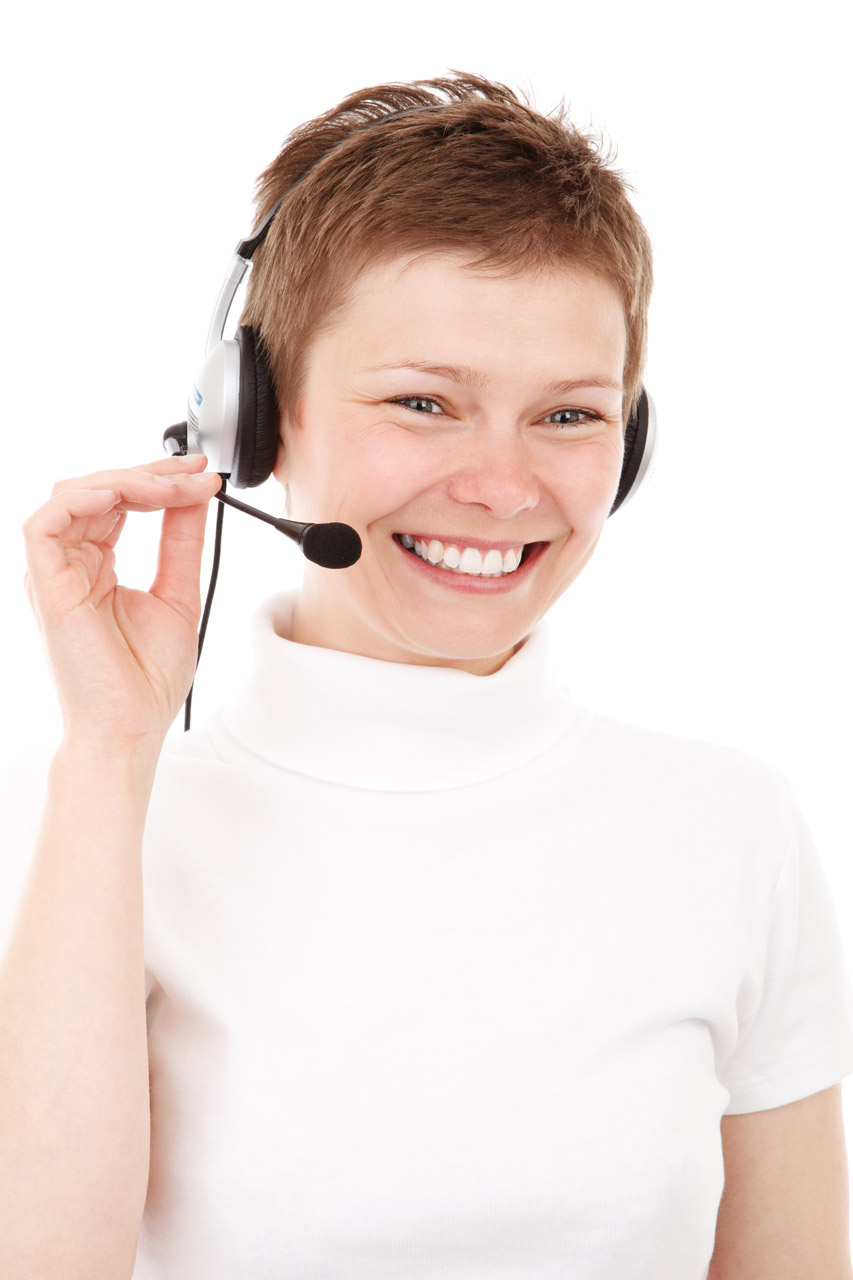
Friendly customer service

Young woman with phone headset smiling isolated on white background - jana svojsova.